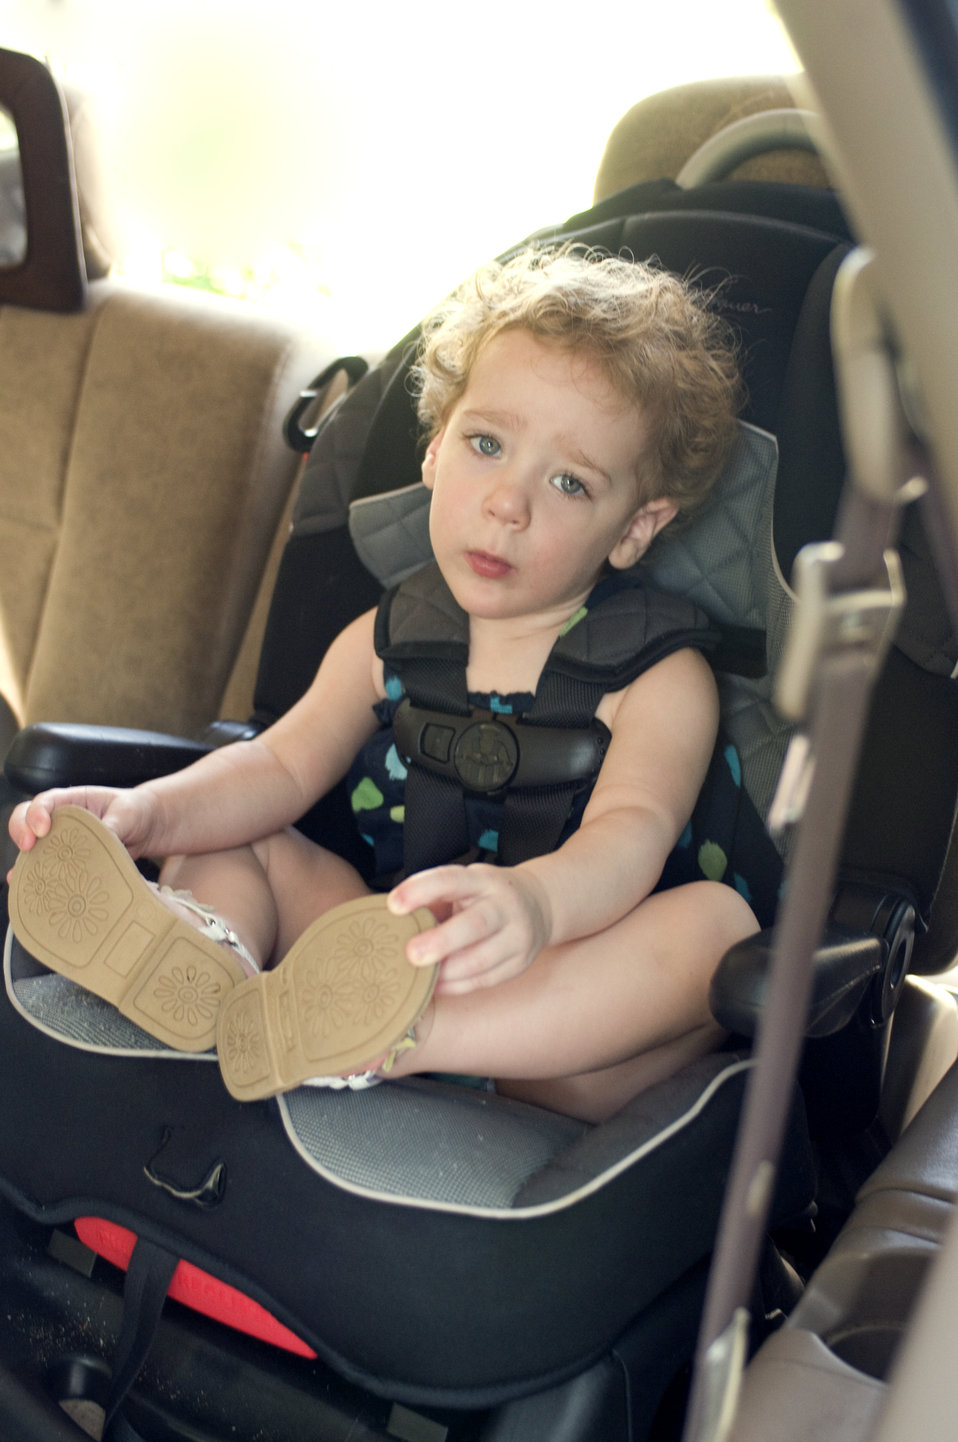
After having been secured in her back seat-located car seat, this young female child was now ready to go for a safer, more secure ride with a qualified driver.